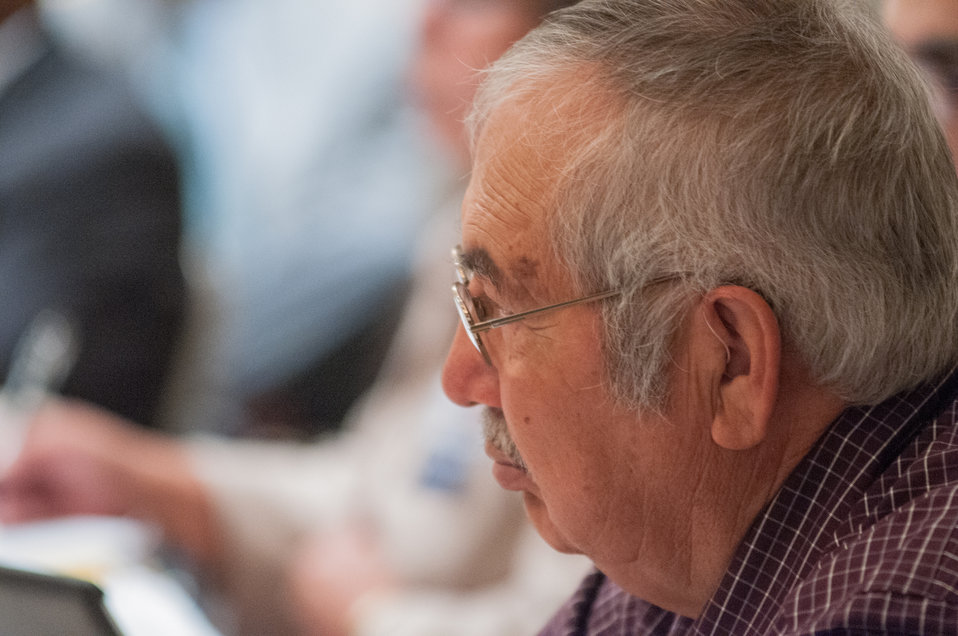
Rancher of the Navaho Nation in Shiprock, NM Gilbert Harrison, listens closely to what Agriculture Secretary Tom Vilsack says, during the U.S. Department of Agriculture's (USDA) Council for Native American Farming and Ranching (CNAFR) advisory committee meeting, on Monday, Sep. 9, 2013 at the L'Enfant Plaza Hotel, in Washington, D.C. CNAFR was created to advise the Secretary on ways to eliminate barriers to participation for Native American Farmers and Ranchers in USDA programs. The Council was established as part of the Keepseagle settlement, and is conducted under the oversight of USDA's Office of Tribal Relations, which is part of the Office of the Secretary of Agriculture. Also in attendance is The Director of Tribal Relations Leslie Wheelock, Agriculture Assistant Secretary for Civil Rights Joe Leonard, Jr. Ph.D., Farm Services Administration Administrator Juan M. Garcia and Deputy Administrator for Farm Loans Programs Chris Beyerhelm.